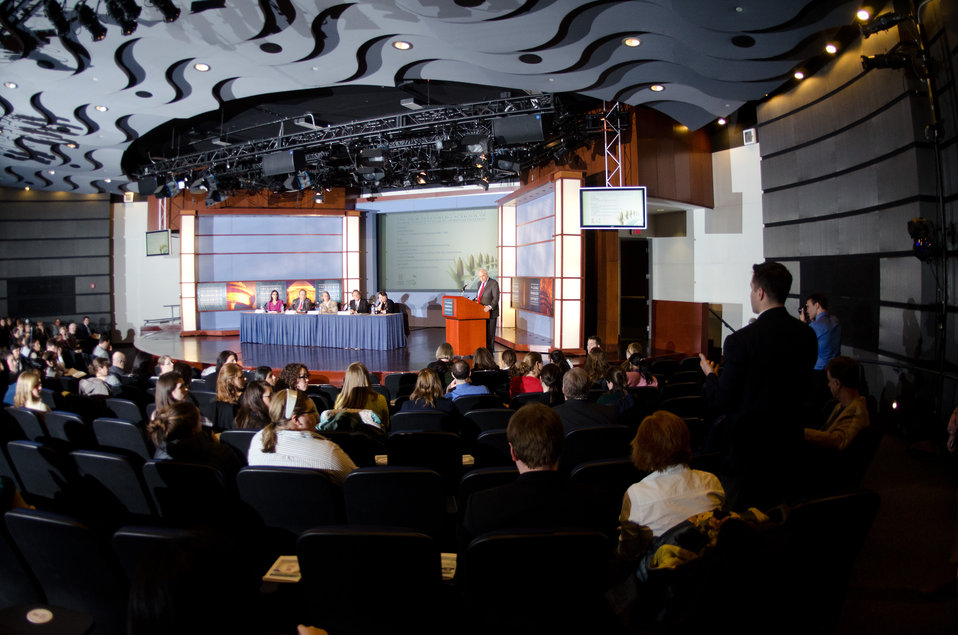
Justin Johnson (standing in audience) asks a question about subsidies and it’s relationship with international trade, to panelists (left to right) National Sustainable Agriculture Coalition Executive Director Susan Prolman, Food Research and Action Center President Jim Weill, Michael Fields Agricultural Institute Public Policy Program Director Margaret Krome, Environmental Working Group President and Co-Founder Ken Cook, Agriculture Deputy Secretary Kathleen Merrigan and Former Agriculture Secretary and moderator Dan Glickman at the “Shaping the Farm Bill for a Sustainable Future” Forum in the Jack Morton Auditorium, at the Trachtenberg School of Public Policy and Public Administration, on the George Washington University campus in Washington, D.C., on Thursday, March 1, 2012.